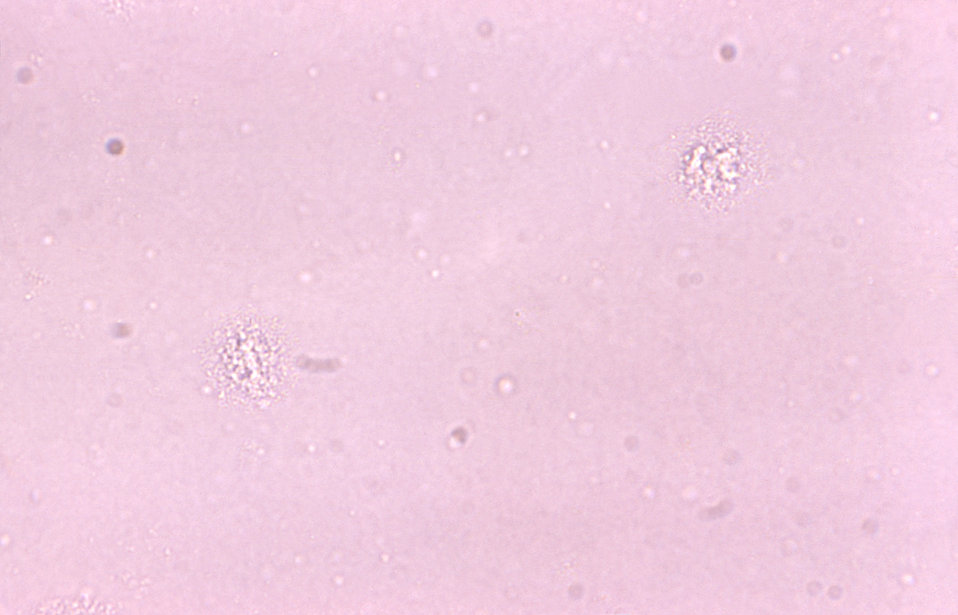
Magnified 500X, four times greater than 10932, this photograph revealed some of the morphologic features exhibited by a number of small-sized Ureaplasm urealyticum colonies, otherwise known as T-strain mycoplasma. These organisms produced heavy growth on 4ml agar.